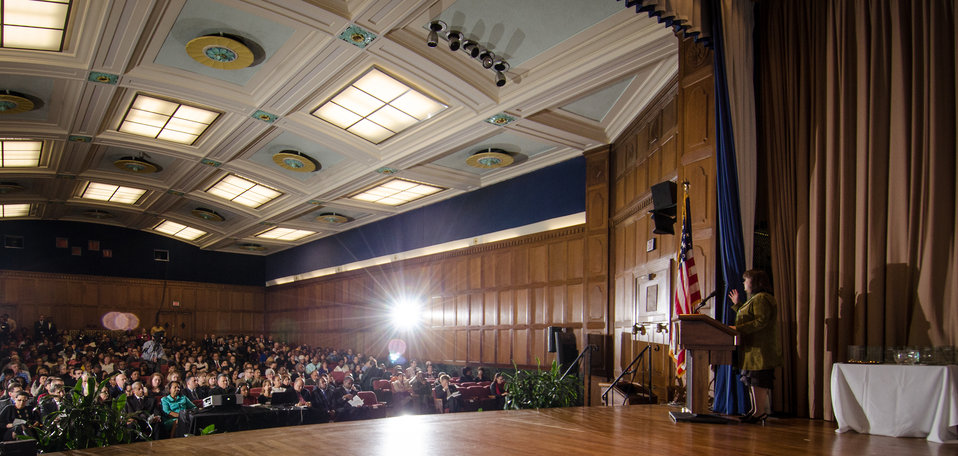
U.S. Department of Agriculture (USDA) Deputy Secretary Kathleen Merrigan speaks during the Dr. Martin Luther King, Jr. National Service Day Drum Major for Service Award ceremony, in Washington, D.C., on Tuesday, Jan. 15, 2013.